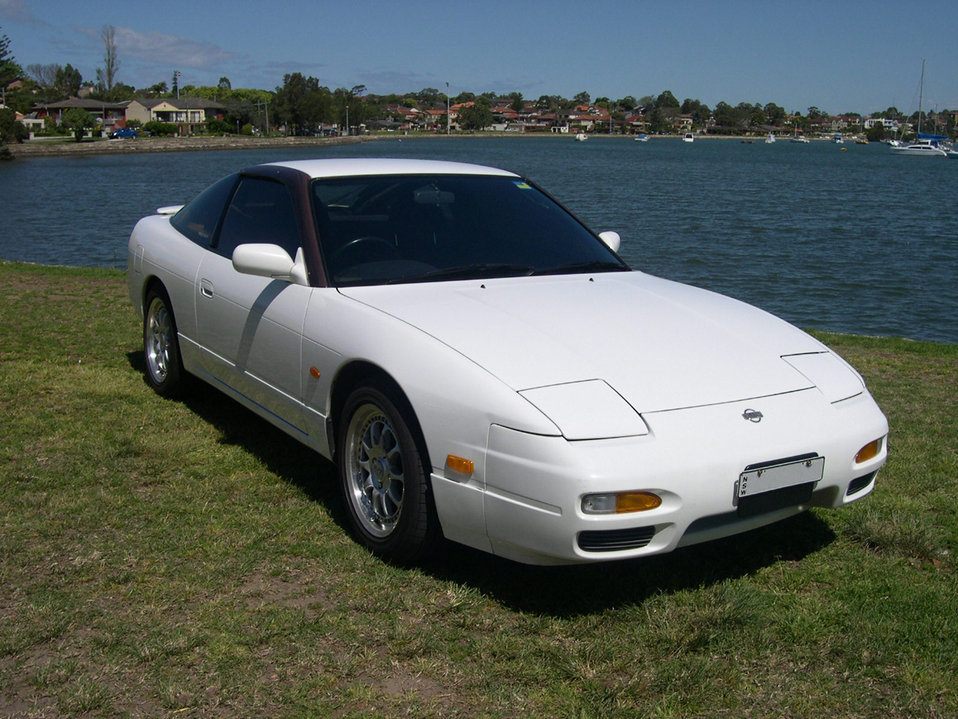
Nissan 180SX (1995 model)